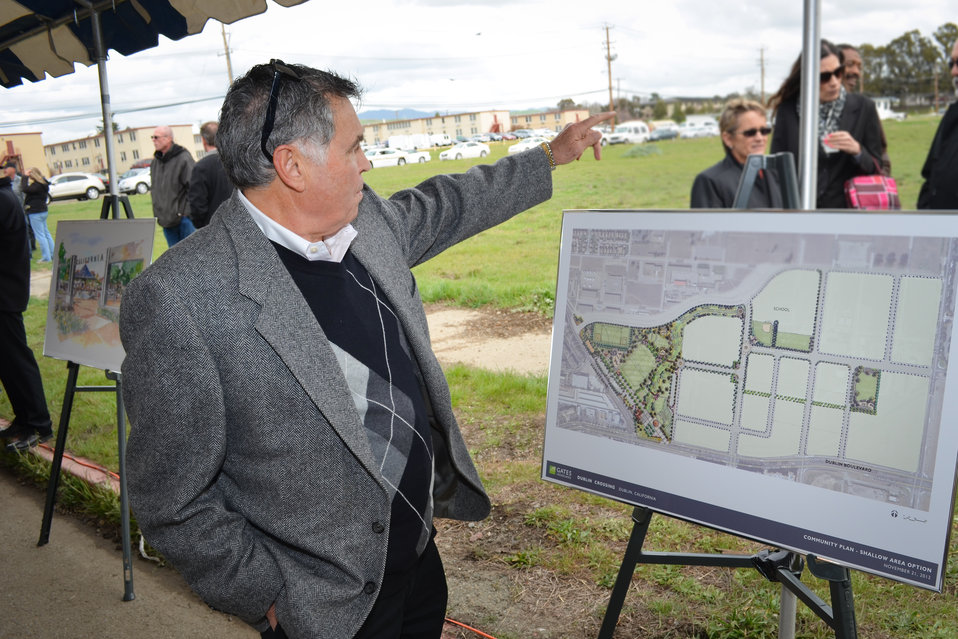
Stan Wallin of the U.S. Army Corps of Engineers Sacramento District's real estate office, points to where a new access control point will be constructed at U.S. Army Garrison Camp Parks Reserve Training center in Dublin, Calif., March 6, 2013.
The district's real estate office is overseeing a 180-acre transfer of land in exchange for an estimated $66 million in modern facilities for Camp Parks over the next several years. Wallin and other representatives from the district attended a groundbreaking ceremony commemorating the first of six phases of construction, which is the largest Army Reserve real property exchange agreement in Department of Defense history.